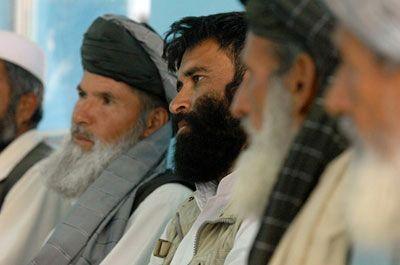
Afghan elders listen to a speaker at a refugee reintegration program site near Kabul, Afghanistan, on October 10, 2010. Assistant Secretary Schwartz then traveled to Afghanistan from October 10-12, 2010. He began with a visit to a rural village comprised primarily of returnees, where U.S. funds have supported a healthcare facility that will now be run by the Afghan Ministry of Public Health. In Mazar-e-Sharif, he visited a government-provided land allocation site for returnees, as well as a center for Afghan women returnees focused on literacy training, heath education, rights awareness and cultural studies. In Kabul, he toured the Orthopedic Hospital run by the International Committee for the Red Cross.